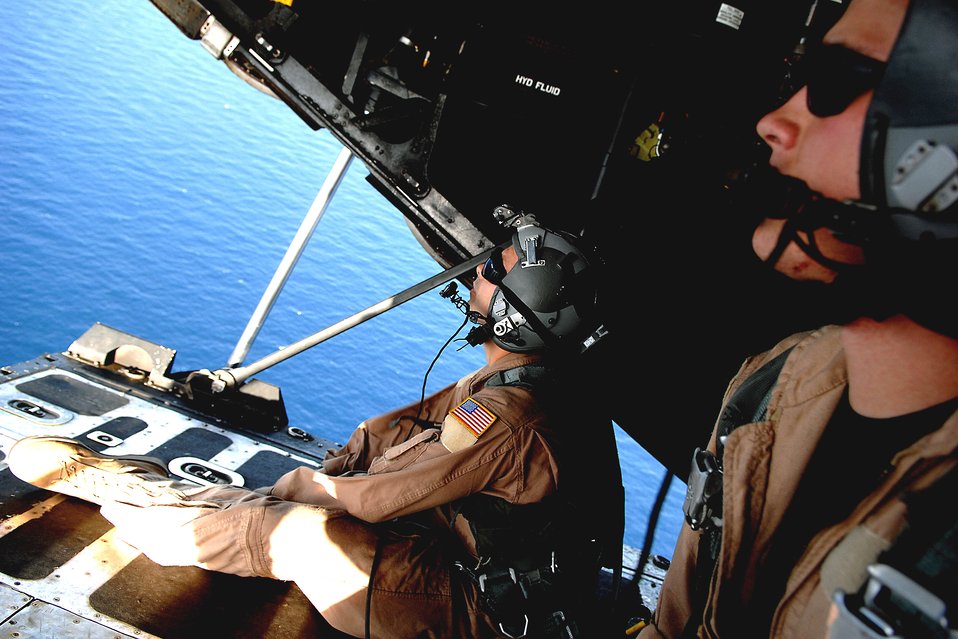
Djibouti Mission

Airman 1st Class Nicholas Greer and Senior Airman Martin Smith watch a smoke grenade fall to the water from the back ramp of an HC-130 Hercules June 3 during a mission off the coast of Djibouti. Both are loadmasters from the 71st Search and Rescue Squadron out of Moody Air Force Base, Ga. The Airmen are deployed to Combined Joint Task Force-Horn of Africa out of Camp Lemonier, Djibouti.